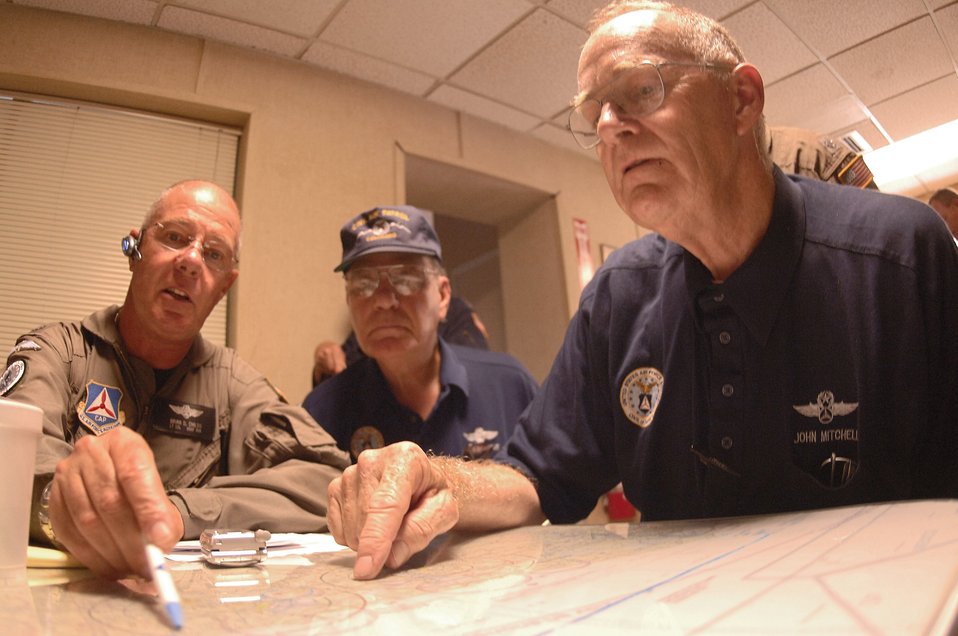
CAP proves worth during Katrina relief

The Civil Air Patrol, the Air Force's official volunteer auxiliary, provides emergency services including air and ground search and rescue, disaster relief and counterdrug missions. Nearly 57,000 members from coast to coast are committed to CAP's emergency services and disaster relief missions.